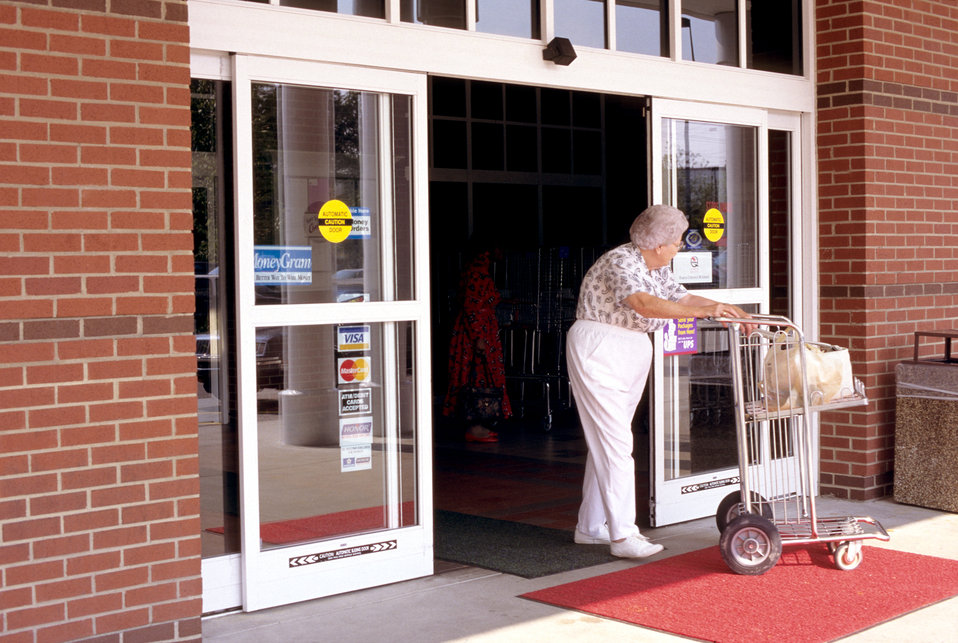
This 1996 image depicted a woman departing a grocery store while pushing a grocery cart. Due to the nature of the act of pushing the cart, had there have been a door with which to contend, the opening, and subsequent avoidance of its closure would have made exiting the store more difficult. However, the automatic, electronic eye-controlled door facilitated the exiting of the store, reducing a patron's need to negotiate another portal. Widely used, 'no-touch' automatic doors accommodate all types of users, including the mobility-challenged, as well as those whose hands are filled with purchases. Simple, and in common use, the wide automatic door is an excellent example of Universal Design. Other facilities should, where possible, consider this option.